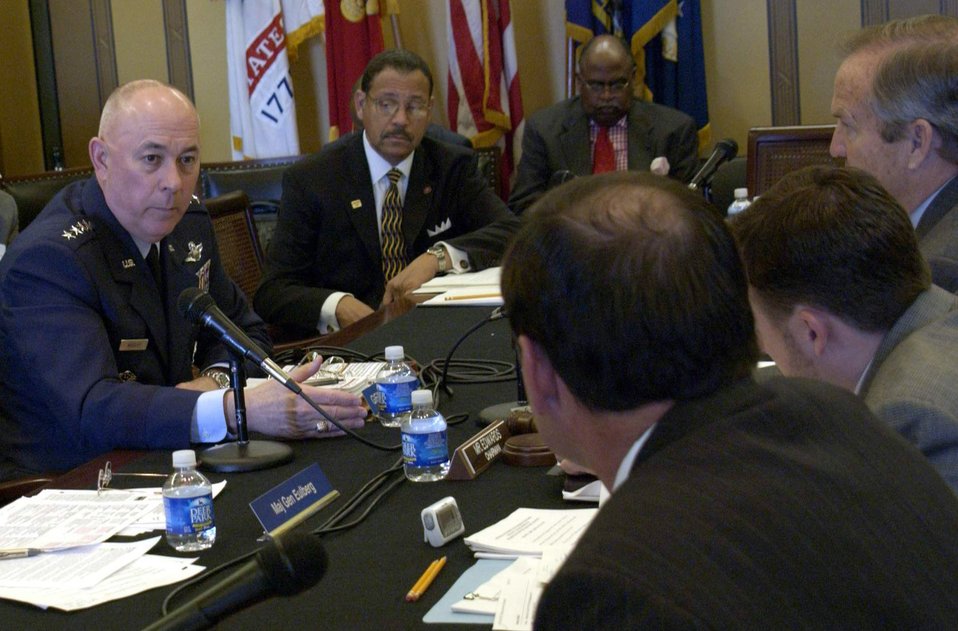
Air Force leaders discuss construction, BRAC with lawmakers

Air Force Chief of Staff Gen. T. Michael Moseley talks with members of the House Appropriation Committee Subcommittee on Military Construction and Military Affairs March 13 in Washington, D.C. General Moseley answered the congressmen's questions on housing projects, base realignment and closure issues, as well as joint basing issues.